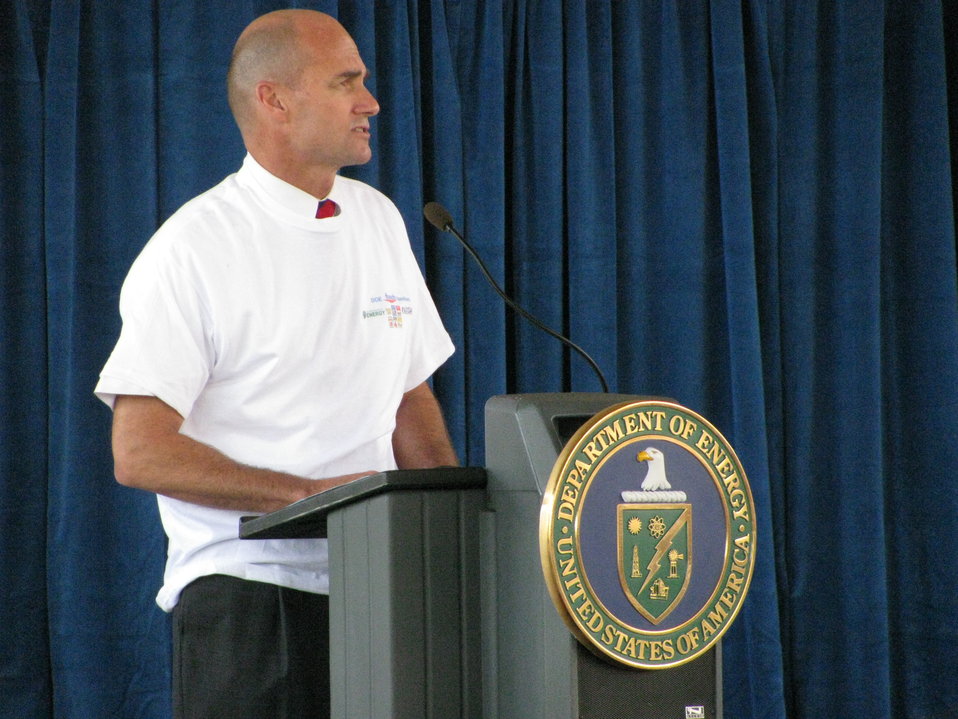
Administrator for National Nuclear Security Agency Tom D’Agostino